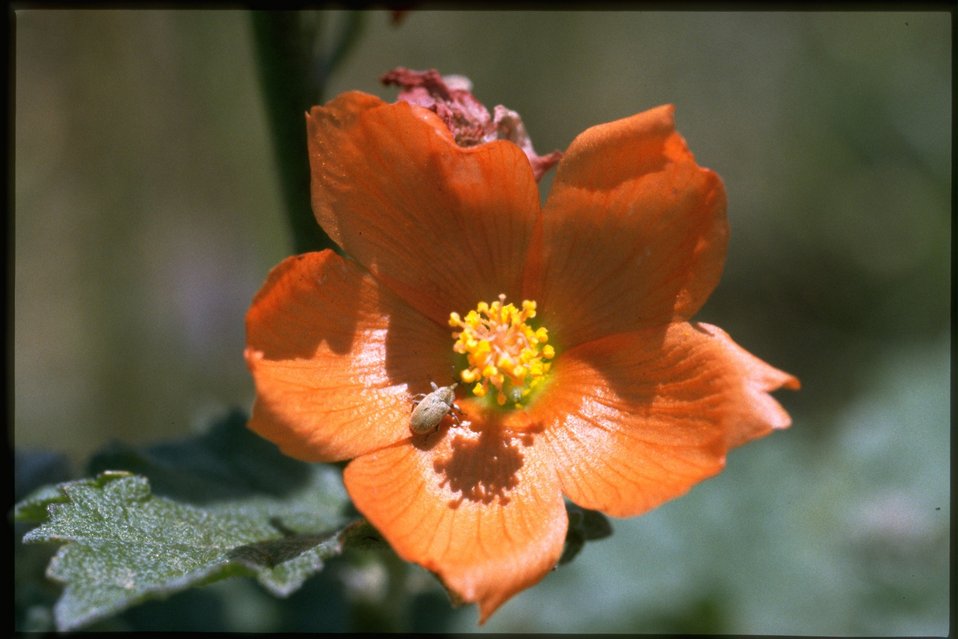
Closeup shot of Sphaeralcea grossular ide folia, Red Glove Mallow.